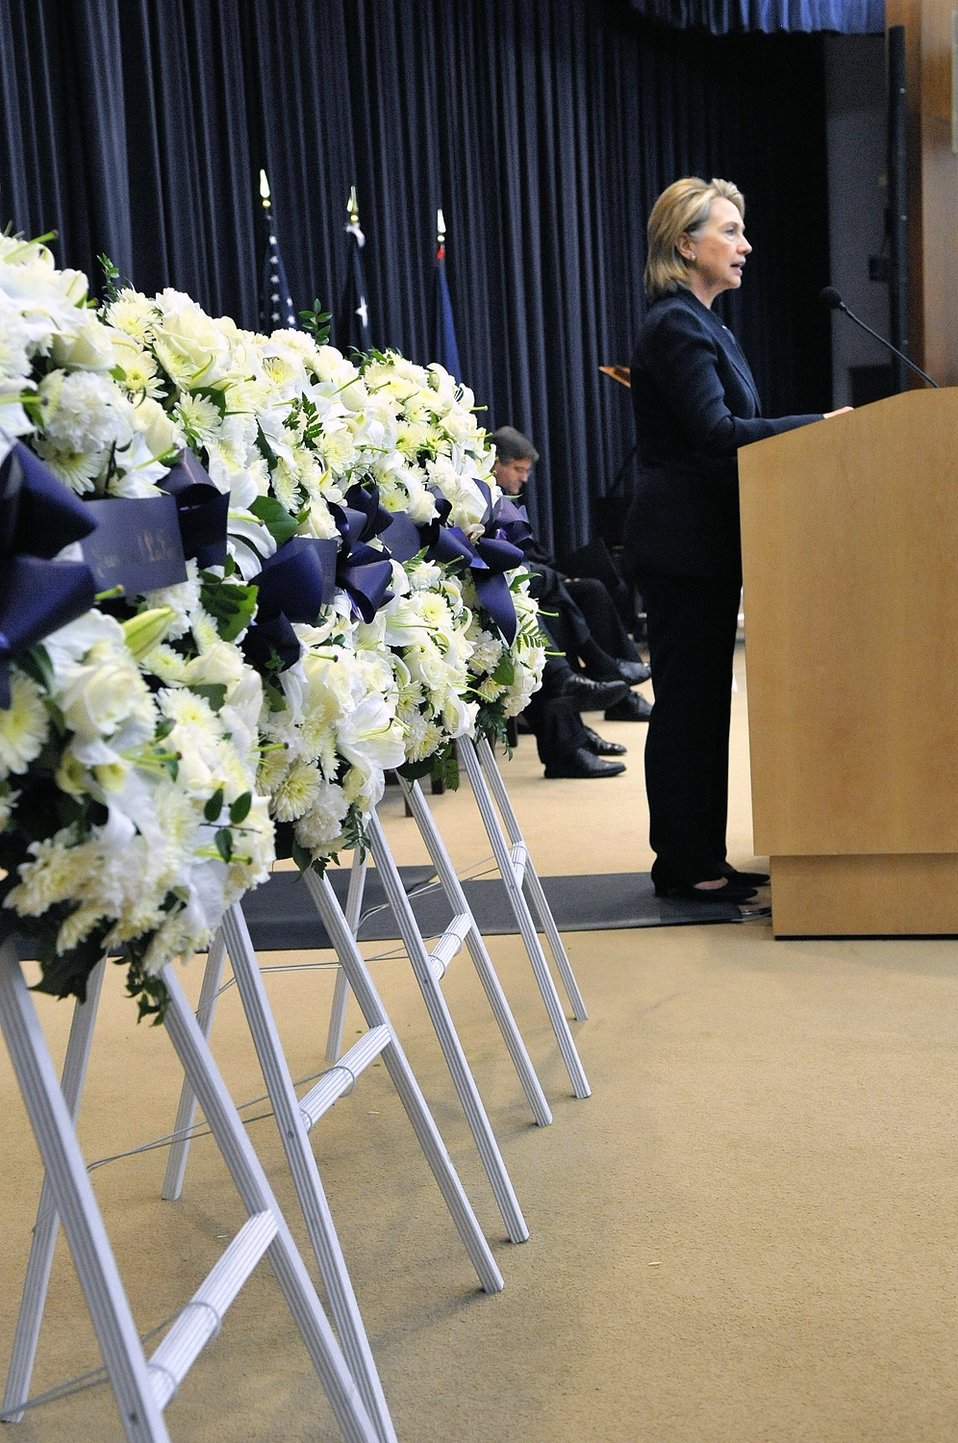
Secretary Clinton Delivers Remarks at Haiti Memorial Service

U.S. Secretary of State Hillary Rodham Clinton delivers remarks at a memorial service for U.S. Embassy Port-au-Prince victims lost during the Haiti earthquake in the Dean Acheson Auditorium at the U.S. Department of State in Washington, D.C., May 17, 2010.